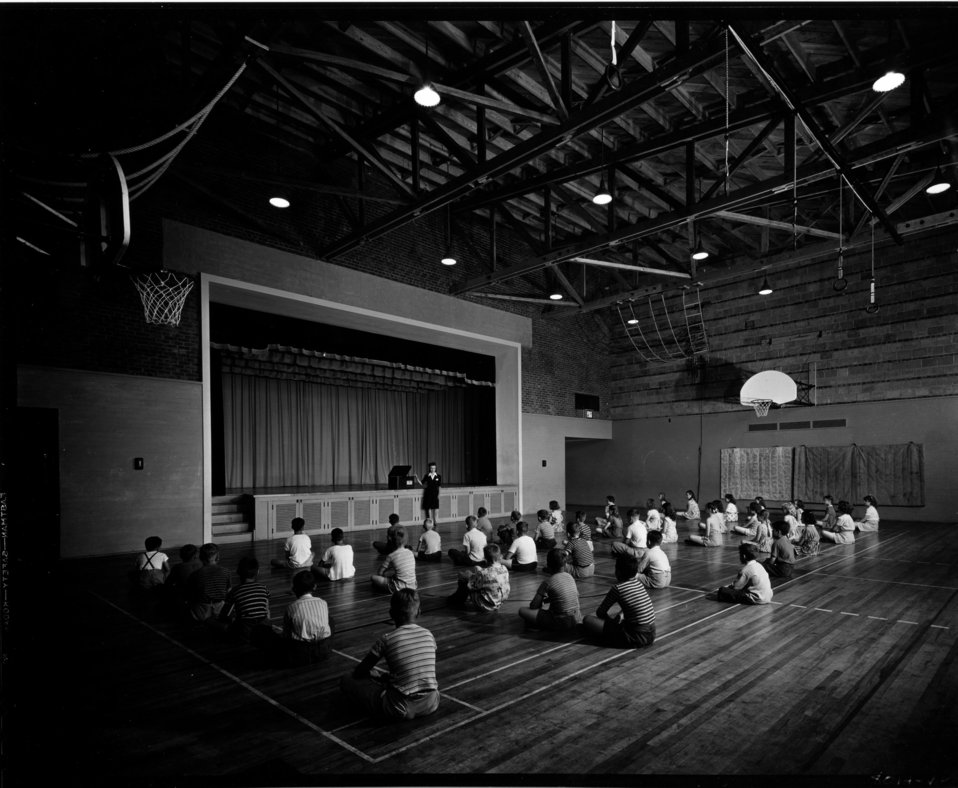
Schools at Oak Ridge